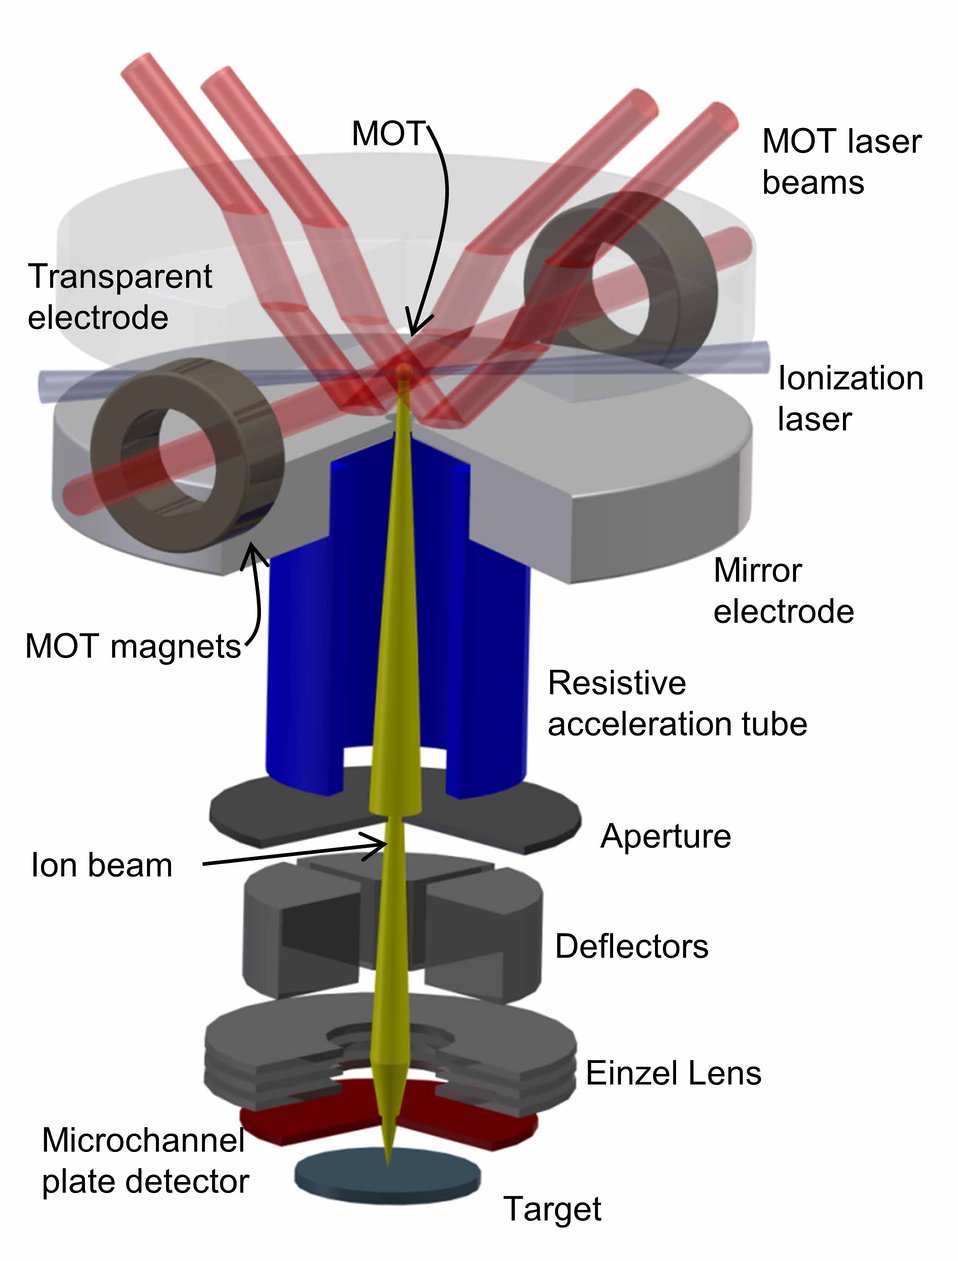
FIB schematic

The NIST focused lithium ion beam microscope traps and cools a gas of lithium atoms to just a few millionths of a degree above absolute zero (MOT section.) Another laser ionizes the atoms and then electric fields accelerate them, straightening out their flight and focus them on a target. The team's new approach opens up the possibility of creating a whole category of FIBs using any one of up to 20 different elements.